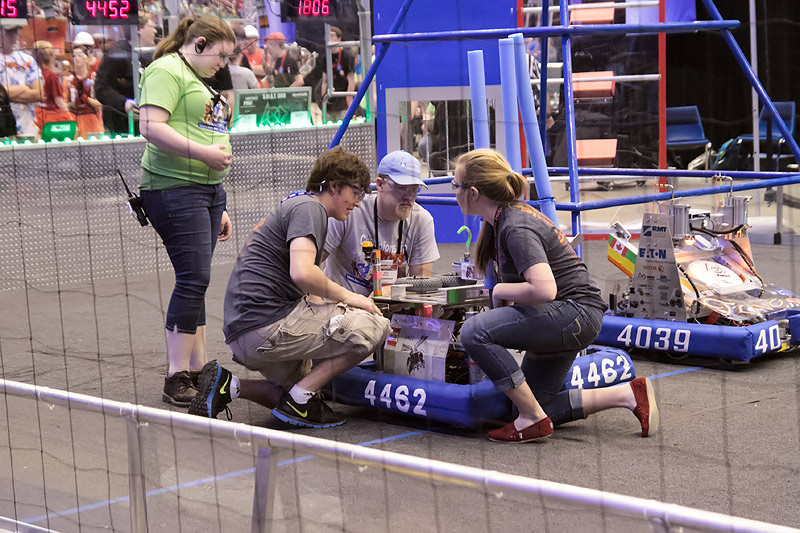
Teams from Hardin Valley Academy, Oak Ridge High School, Halls High School and Roane County High School Competed in the First Robotics Worldwide Finals held April 24-27, 2013 in St. Louis.

The four high schools were among 14 teams sponsored by UT-Battelle, the managing contractor of Oak Ridge National Laboratory, during the 2013 season.